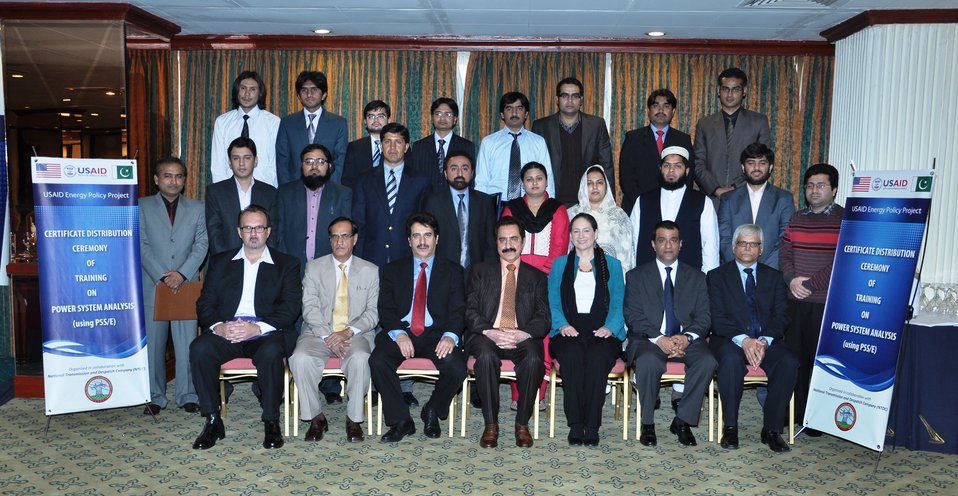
Certificate Distribution Ceremony of Training on Power System Analysis

Melissa Knight, Energy Office Director USAID/Pakistan, and Saeed Anwar, Senir Progam Manager, Energy Office USAID/Pakistan with particpants of the Power System Analysis Training.
The Certificate Distribution Ceremony of Training on Power System Analysis was organized in Lahore on February 28, 2012.
The Power System Analysis Training was organized by Energy Policy Project as part of its activities for the power sector entities capacity building program and supporting energy sector reforms.